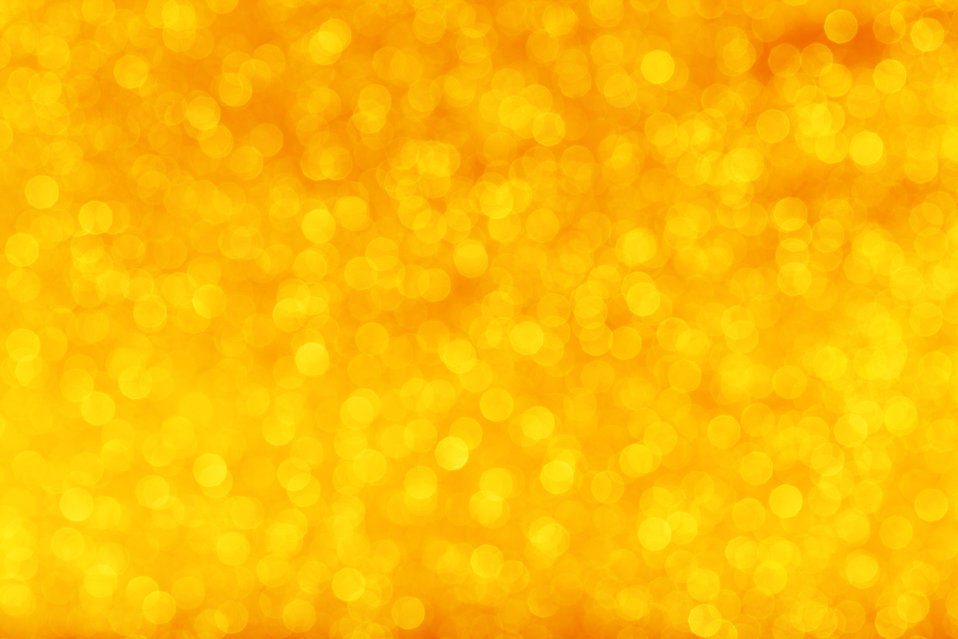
Golden background

Blurry golden yellow background.